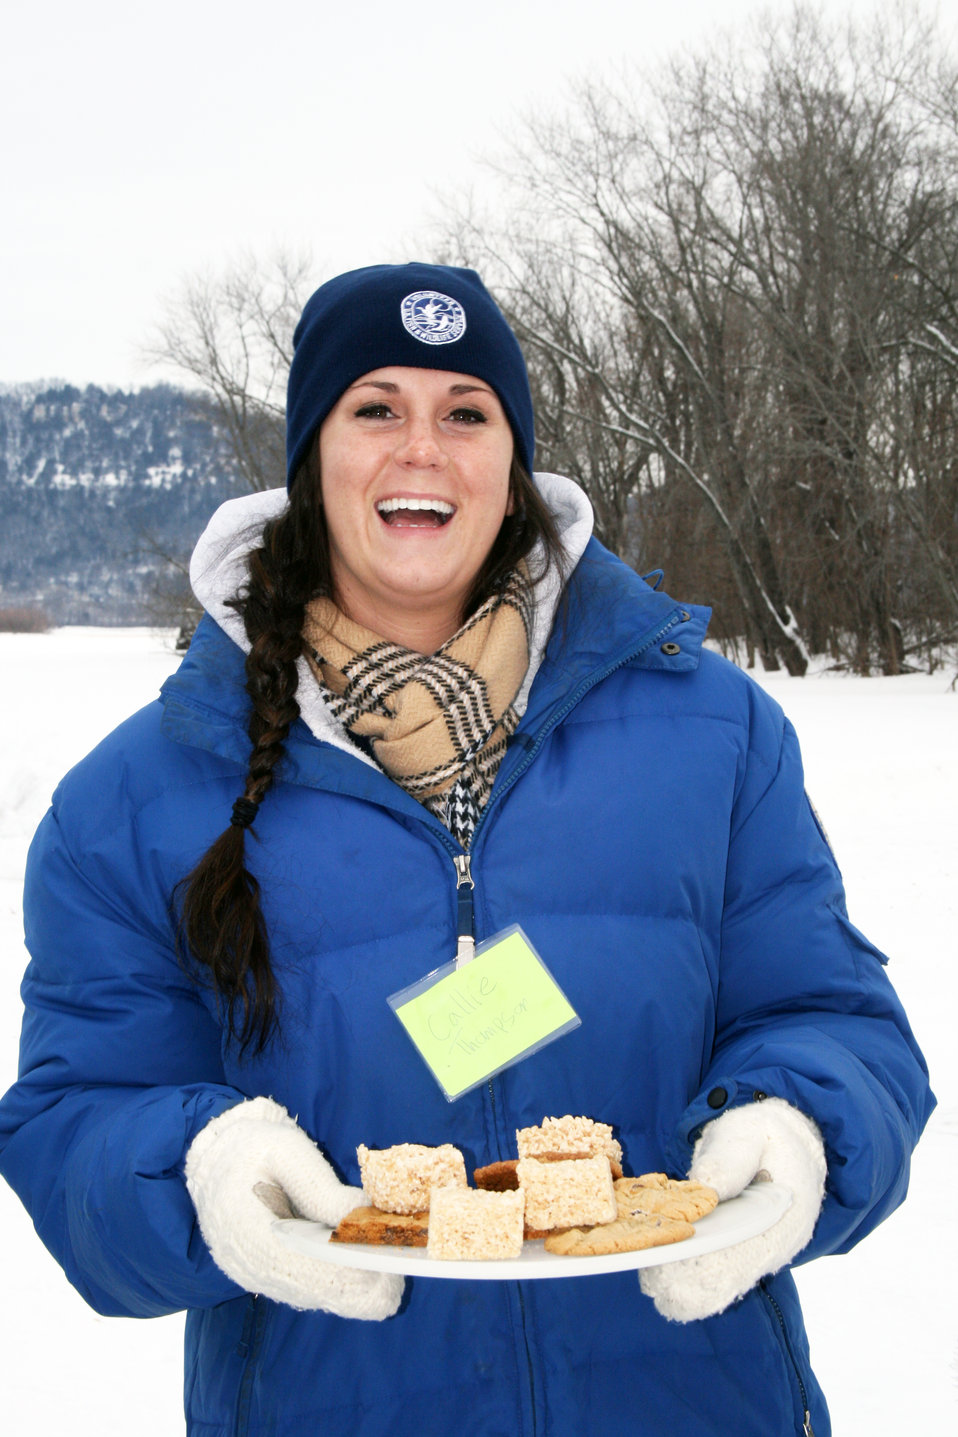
Treats!

Refuge Volunteer Callie delivers treats to the anglers on the ice.